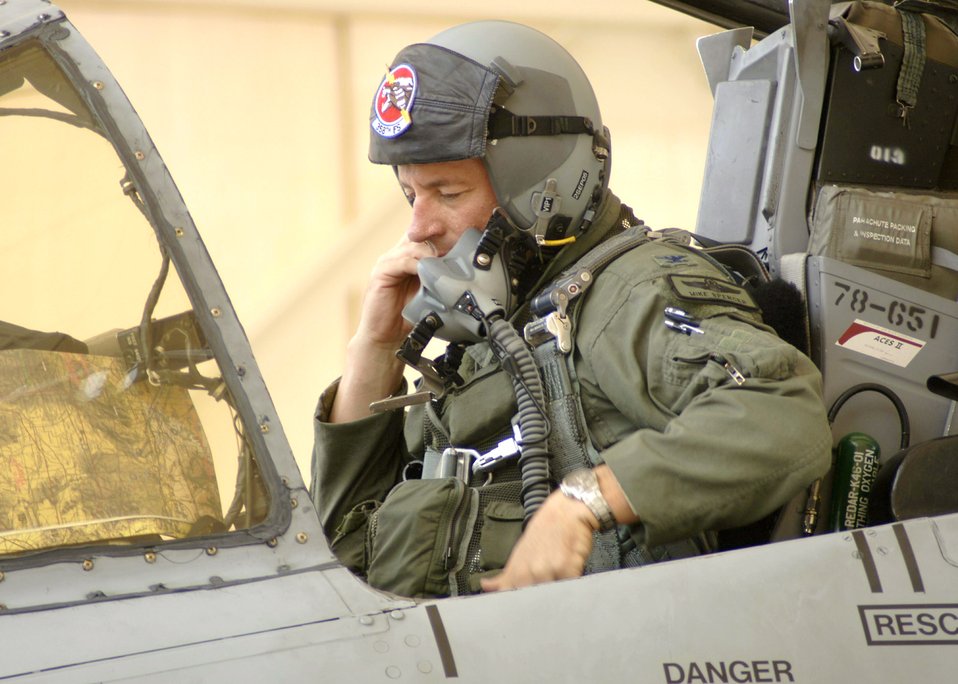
Cleared for takeoff

DAVIS-MONTHAN AIR FORCE BASE, Ariz. -- Col. Michael Spencer prepares to take off in an A-10 Thunderbolt II. He is the 355th Wing commander.